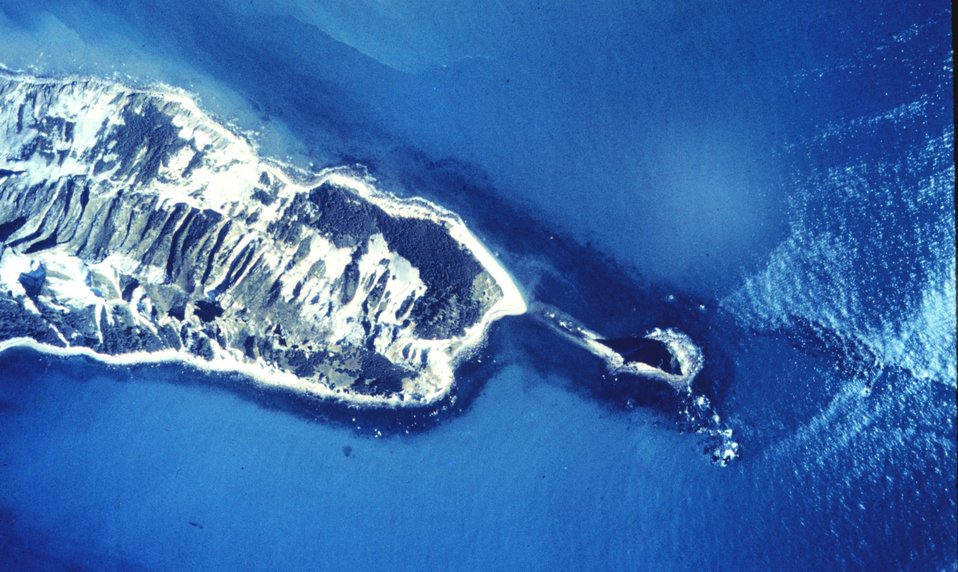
Kayak Island, Cape St. Elias, from the air